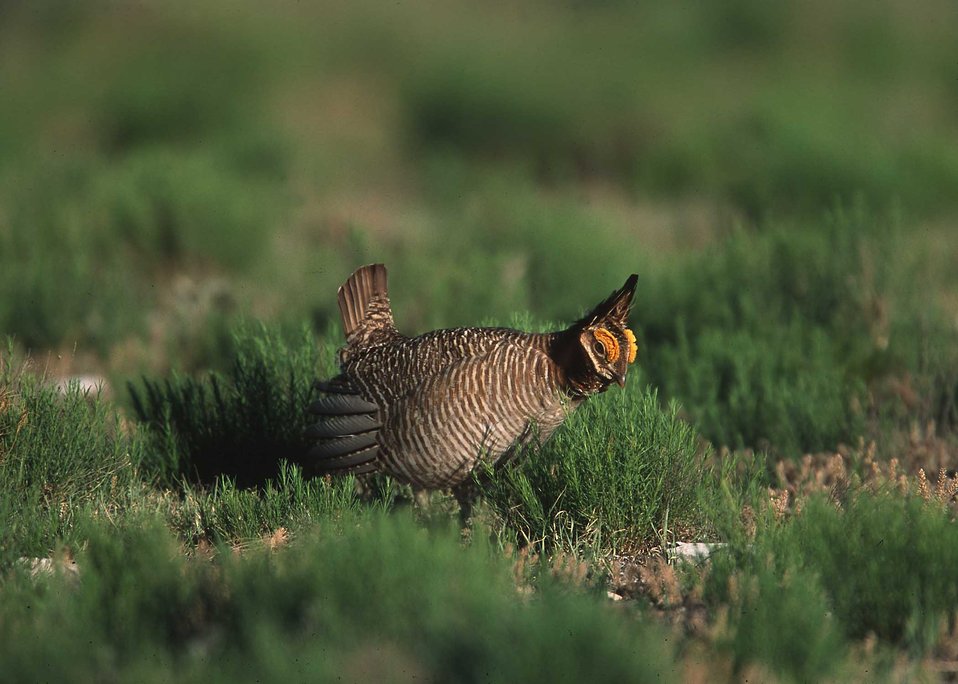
Lesser prairie chicken in Eastern New Mexico.